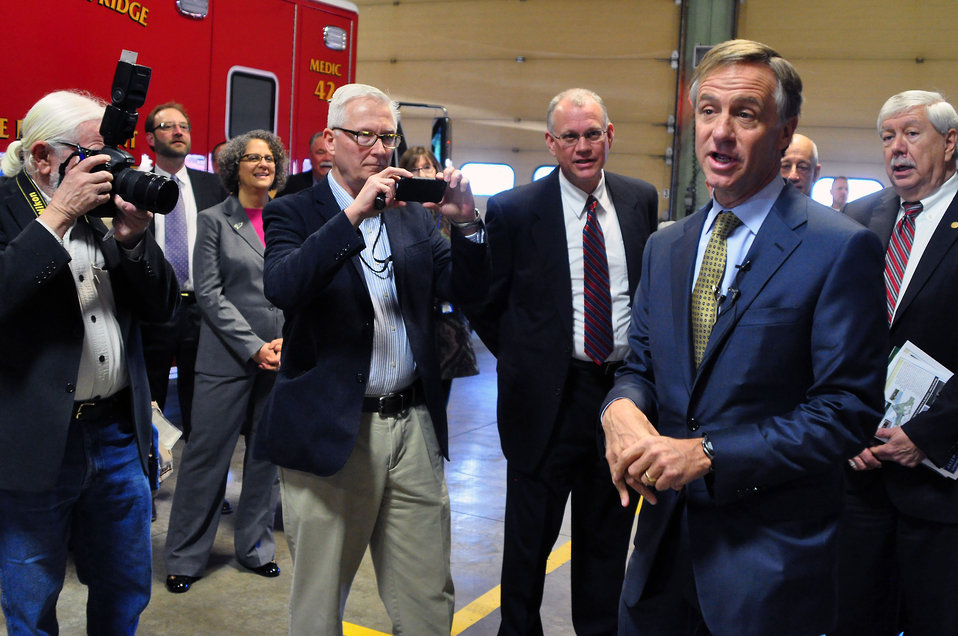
Gov. Bill Haslam Visit to ETTP 2014 Oak Ridge

14-037 DOE photo Lynn Freeny 3-21-2014 Oak Ridge Tennessee